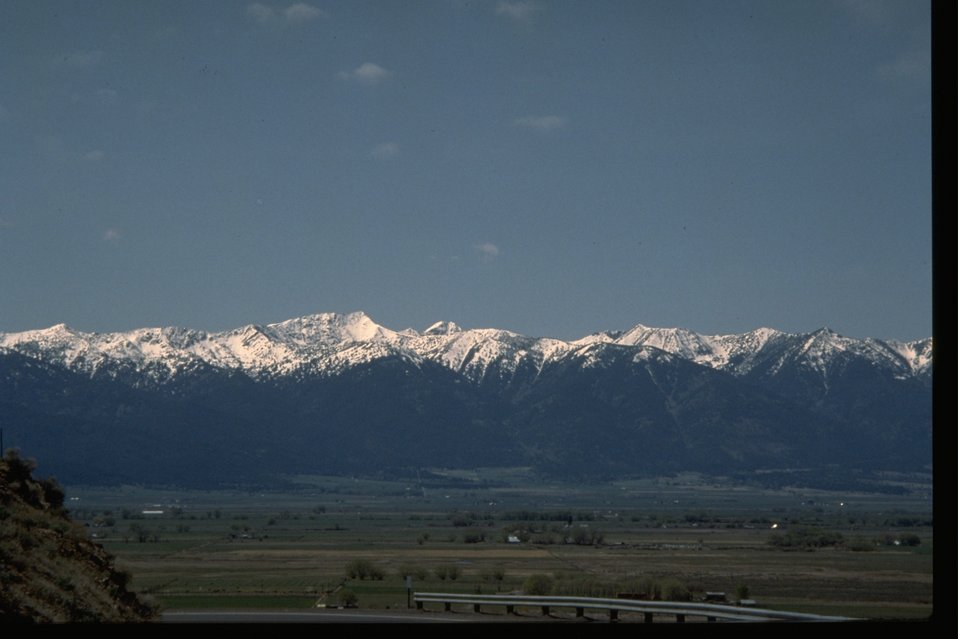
View of Baker Valley, Blue Mountain from the center.